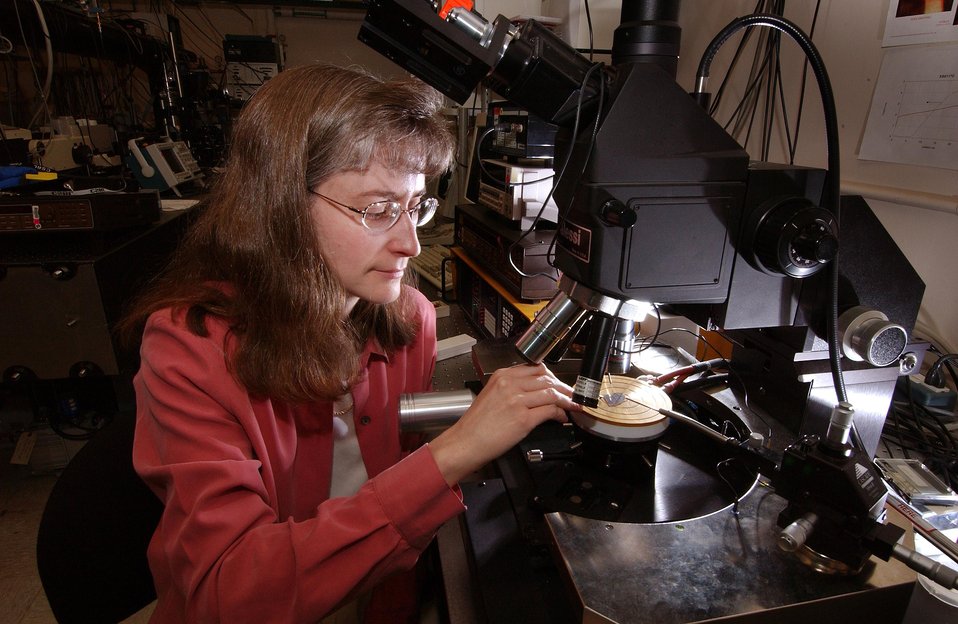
SANDIA RESEARCHER MAY CRAWFORD, PART OF AN AWARD WINNING TEAM FOR BREAKTHROUGHS IN ULTRAVIOLET LEDS.

SANDIA'S BREAKTHROUGH IN DEEP ULTRAVIOLET (UV) SOLID-STATE, LIGHT EMITTING DIODES (LEDS) HAS LED TO DEMONSTRATIONS OF BIO-AGENT DETECTION AND A NON-LINE-OF-SIGHT COMMUNICATION SYSTEM. FURTHER DEVELOPMENT COULD ENABLE WATER PURIFICATION, DECONTAMINATION, AND THIN FILM CURING.